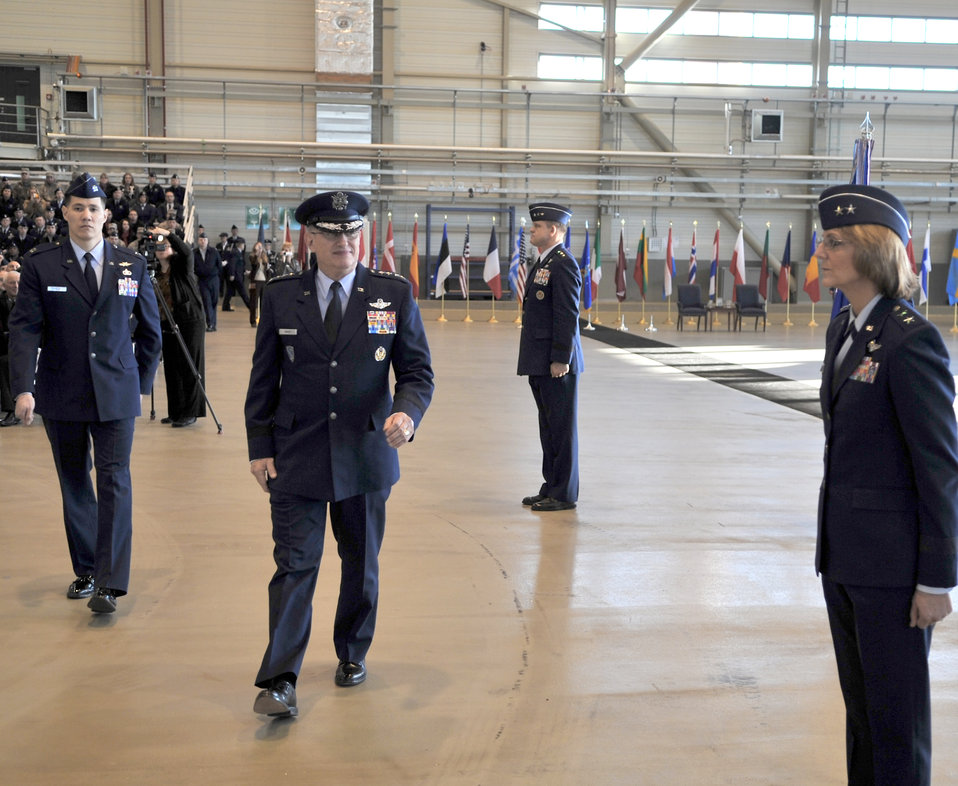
Gen. Mark A. Welsh III takes command of USAFE

Gen. Roger A. Brady, the outgoing U.S. Air Forces in Europe commander, gives a final inspection to his Airmen during a change of command ceremony Dec. 13, 2010, at Ramstein Air Base, Germany. General Brady relinquished command to Gen. Mark A Welsh III during the change of command ceremony, after providing command and control for air, space and missile defense for activities in an area of operations covering almost one-fifth of the world, including 51 countries in Europe, Asia, the Middle East, and the Arctic and Atlantic oceans.